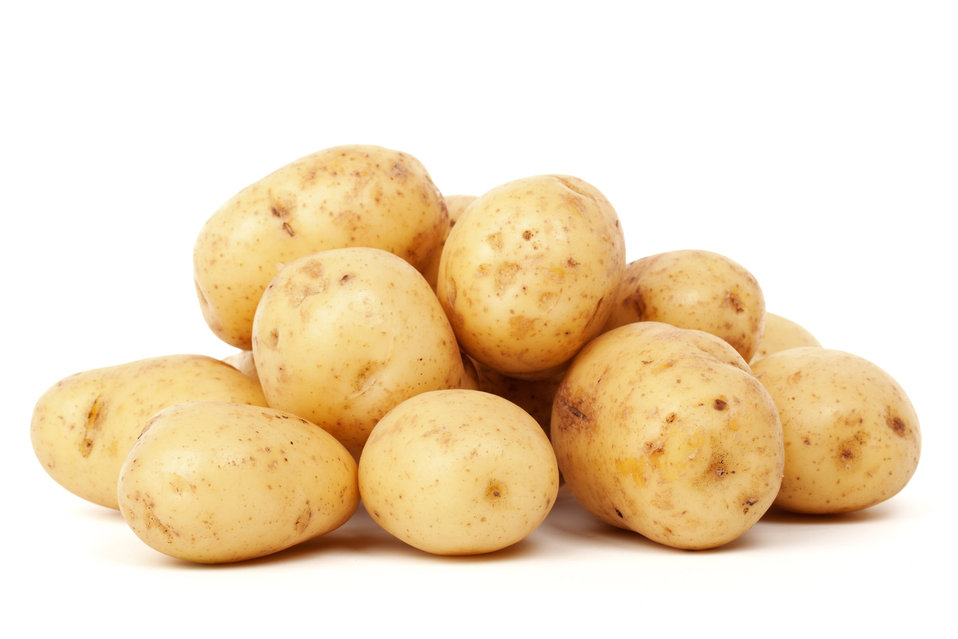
Isolated potatoes

Fresh raw pile of potatoes isolated on white background.